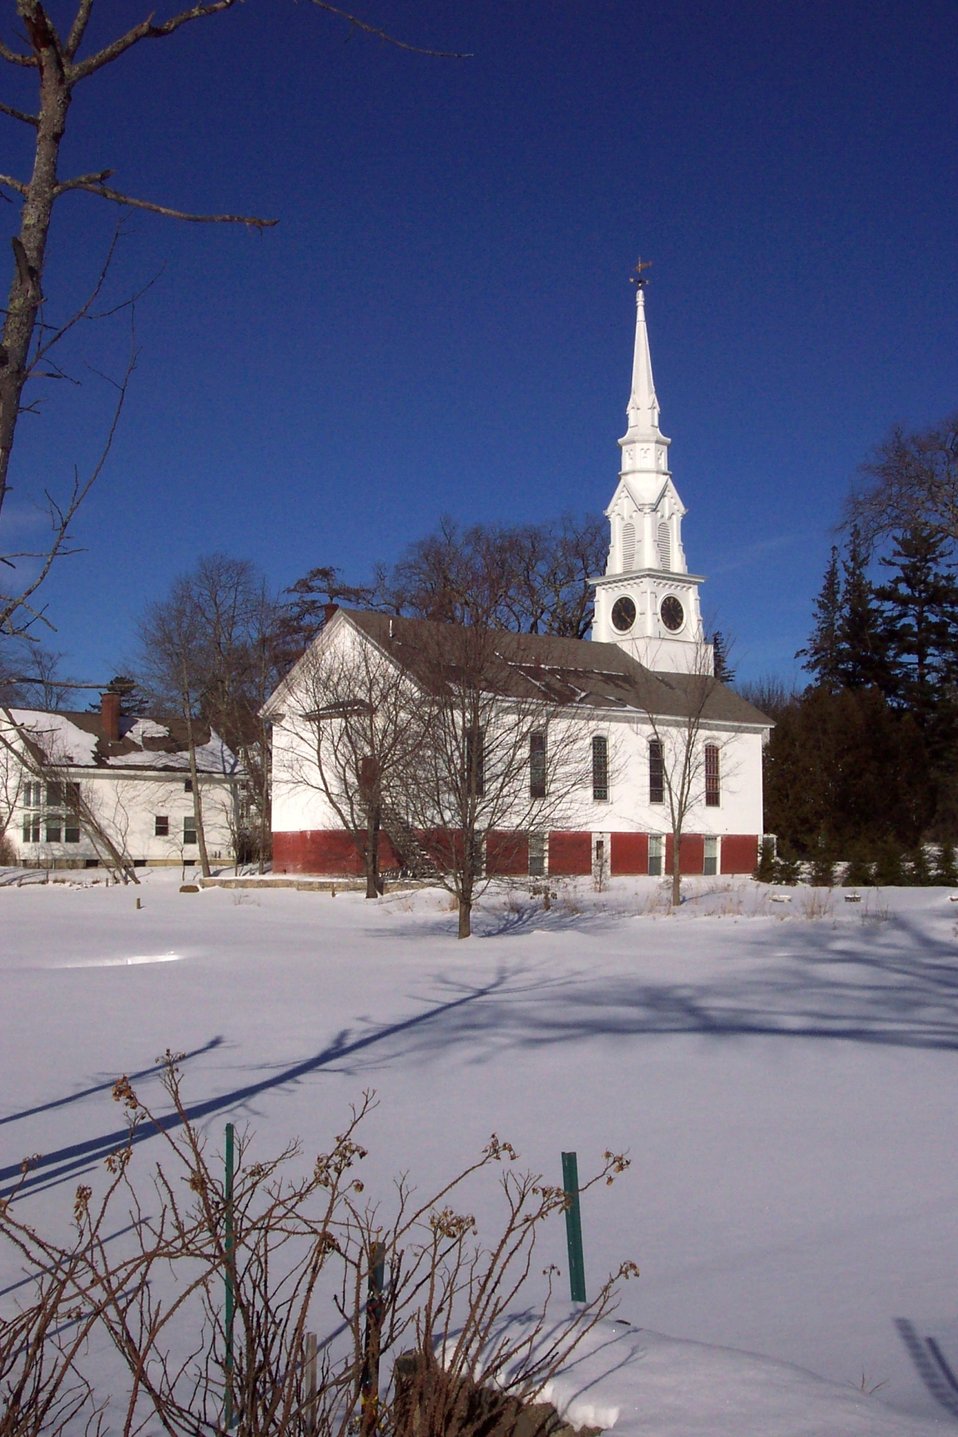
A beautiful New England Church at Castine. Note the fish-shaped weather vane on the steeple.